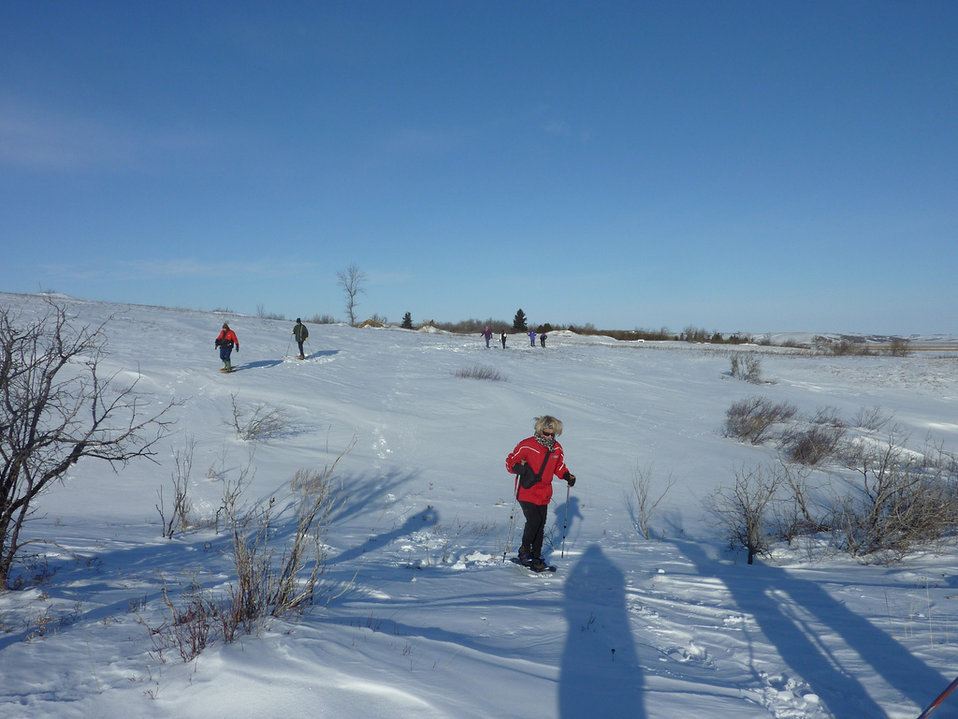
Let's go snowshoeing at Des Lacs Refuge

Participants in the refuge's January 2011 snowshoeing event ranged in experience from beginner to expert.